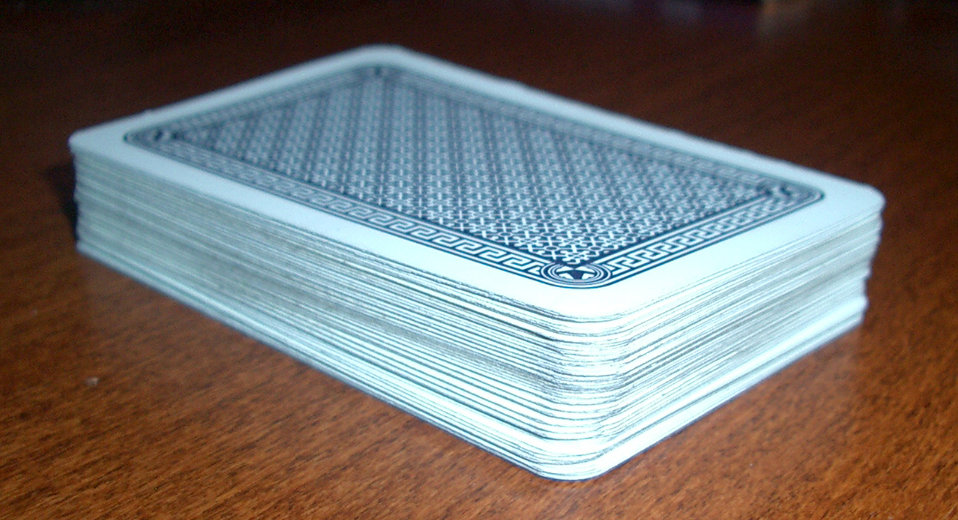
Pack of playing cards.